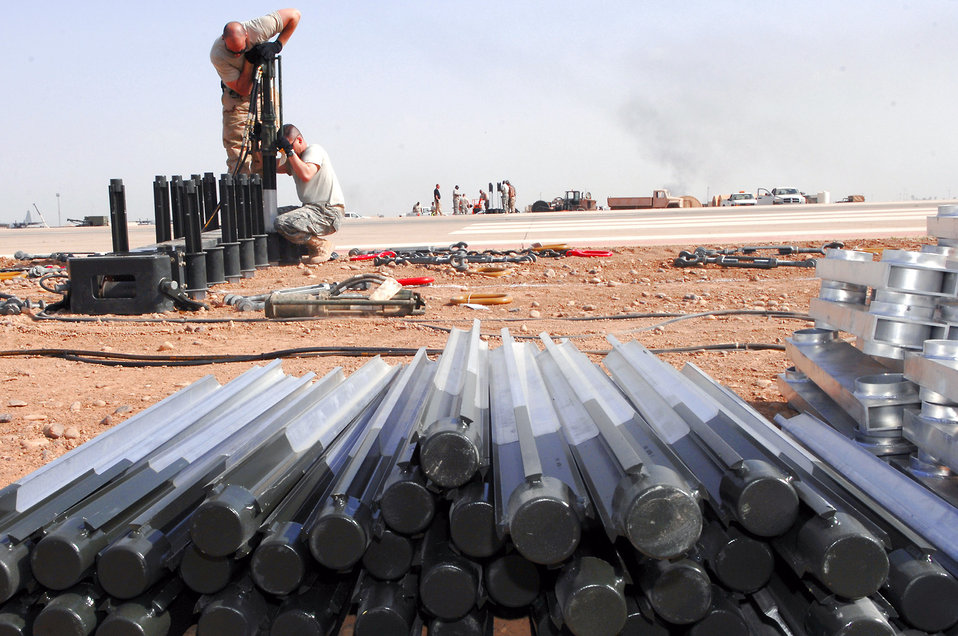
Arresting development

Tech. Sgt. Randy Thibeau and Master Sgt. Gerald Kiger hold a stake hammer as it pounds a four-foot stake into the ground March 12 at Balad Air Base, Iraq. The team drove 168 steaks into the ground to hold the entire arresting barrier system in place. If a fighter aircraft experiences malfunctioning landing gear, the pilot can a drop a hook to catch a cable attached to the barrier system, which slows the aircraft and enables a smoother landing. Sergeant Thibeau is deployed from Ellsworth Air Force Base, S.D.; Sergeant Kiger is deployed from Yokota Air Base, Japan. Both are 332nd Expeditionary Civil Engineer Squadron power production technicians.